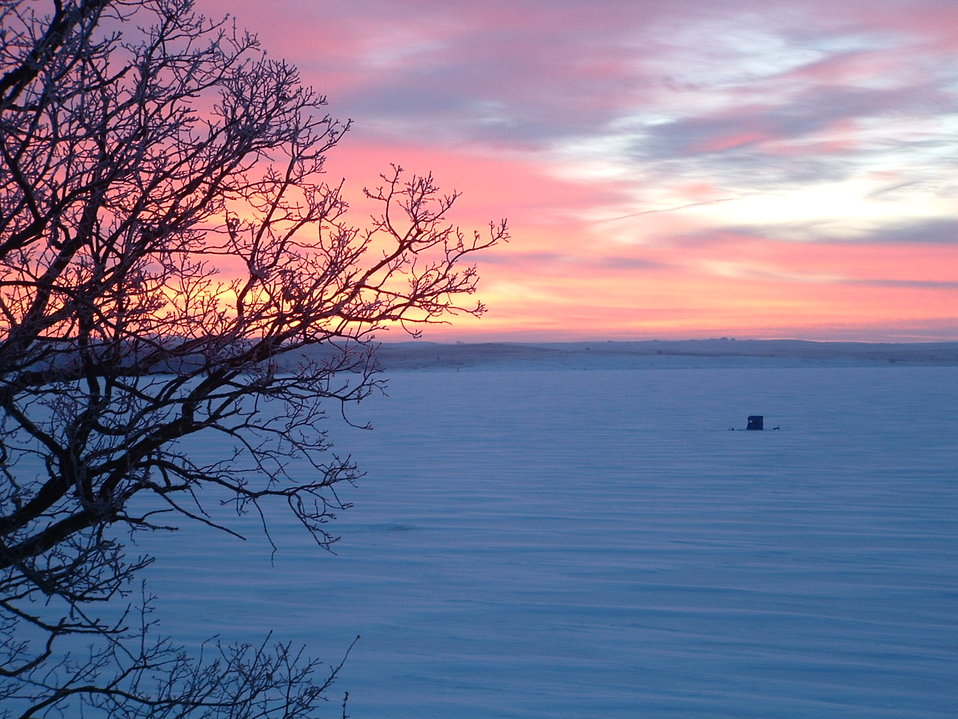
Ice Fisherman at Sunrise, Waubay National Wildlife Refuge

A lone ice fishing shack on Spring Lake at sunrise at Waubay National Wildlife Refuge.